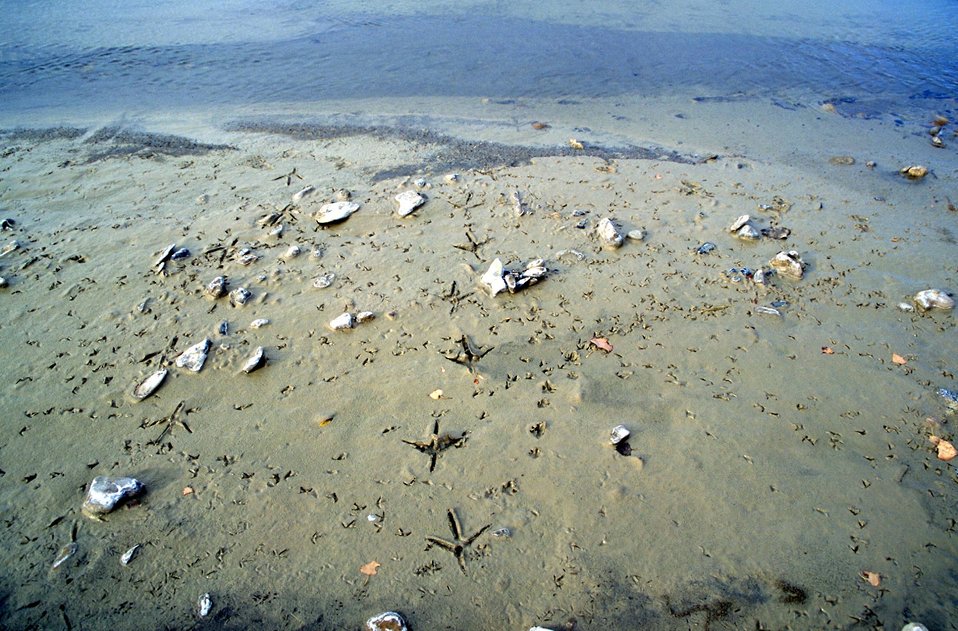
Shore bird tracks on the Yellowstone River bank